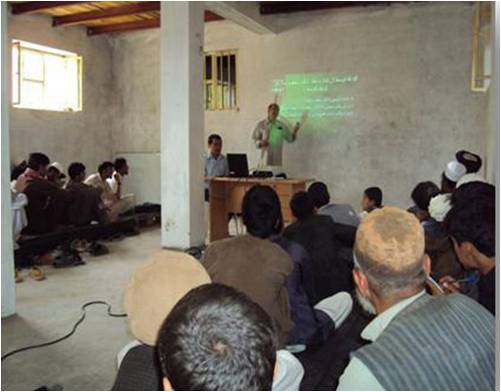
Grape Expectations: Farmers Improve Production through USAID-Funded Training

PARWAN, Afghanistan, - A USAID-funded agriculture training program in Charikar is teaching farmers how to maintain grapes to ensure product quantity and quality and how to market grapes after collection. The training, which began on March 7 and will end June 1, was designed in coordination with the Parwan Department of Agriculture, Irrigation, and Livestock (DAIL).